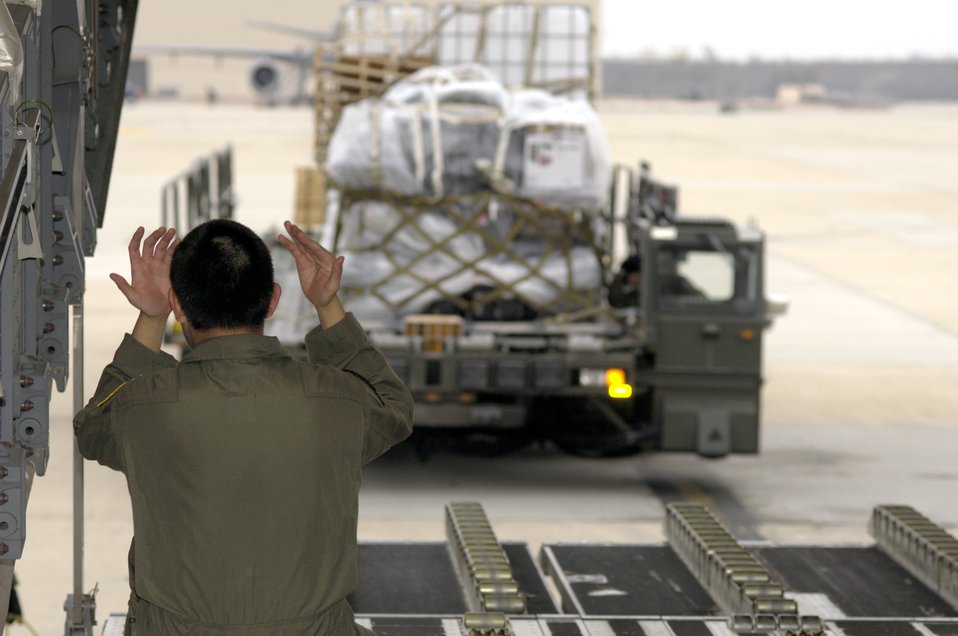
McGuire Airmen support downed satellite cleanup

Senior Airman Miguel Leon marshals in supplies and equipment for Joint Task Force Operation Burnt Frost Feb. 20 at McGuire Air Force Base, N.J. The JTF was the recovery part of Operation Burnt Frost which covers the shoot down of the errant satellite loaded with hydrazine. The supplies were for 15 federal agencies tasked to handle the environmental effects of the satellite's reentry into the atmosphere. Airman Leon is a 6th Airlift Squadron loadmaster.